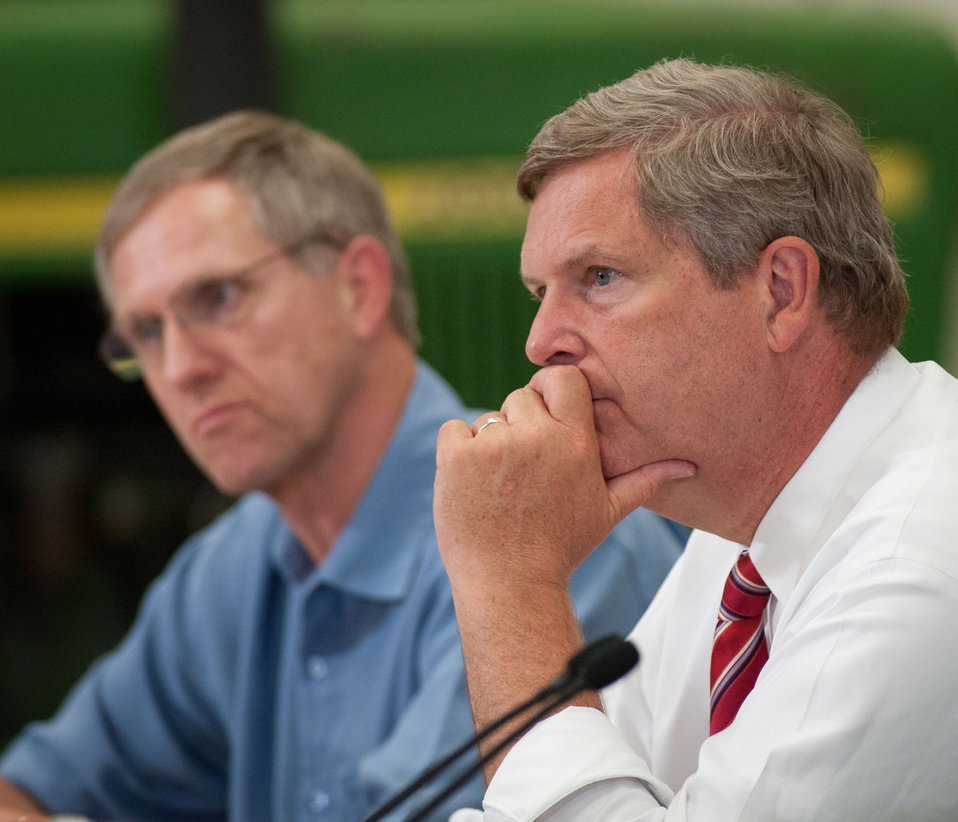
U.S. Department of Agriculture Secretary and chair of the White House Rural Council, Tom Vilsack, (right center) meets with Iowa stakeholders at the Northeast Iowa Community College, IA, during the White House Rural Economic Forum, on Tuesday, August 16, 2011.